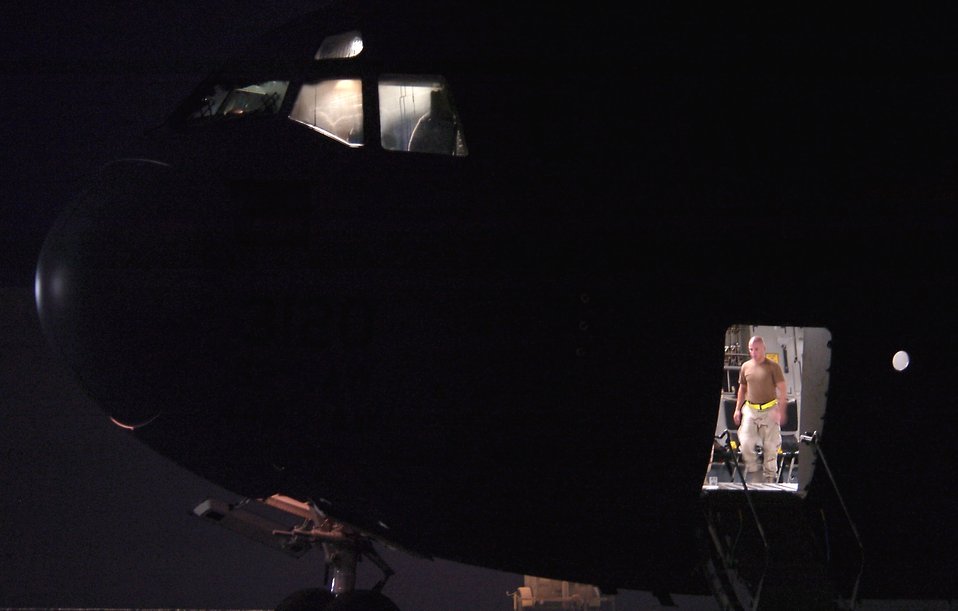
Globemaster operations

An aircraft maintenance Airman prepares a C-17 Globemaster III from the 816th Expeditionary Airlift Squadron for takeoff Aug. 5. The 816th EAS flew more than 1,200 sorties in July, delivering cargo and troops in support of operations Iraqi Freedom and Enduring Freedom.